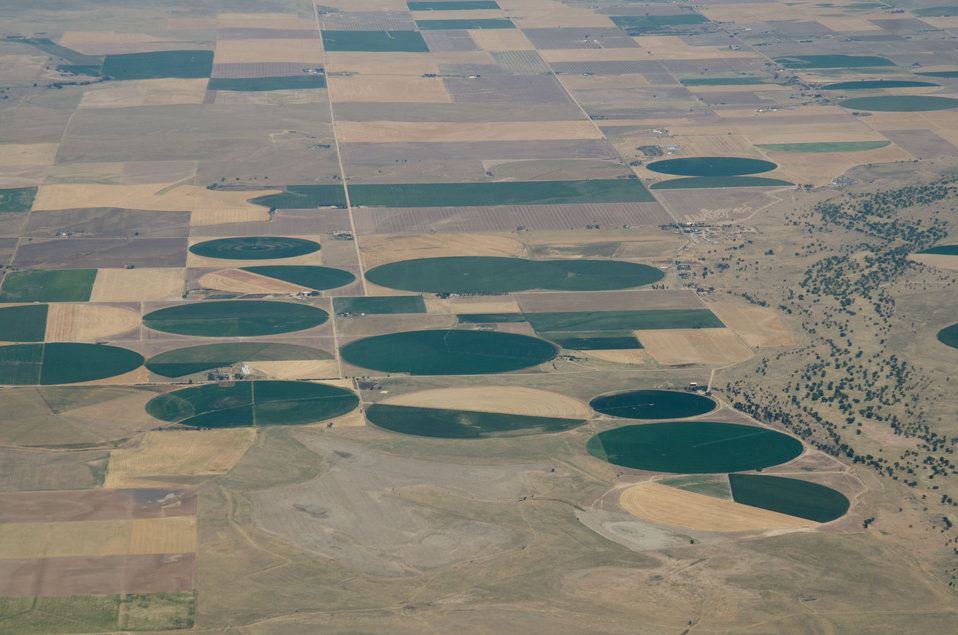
Aerial views of drought affected Colorado farm lands, near Wiggins, Colorado on Saturday, July 21, 2012. Green areas are irrigated, the yellow areas are dryland wheat crops.